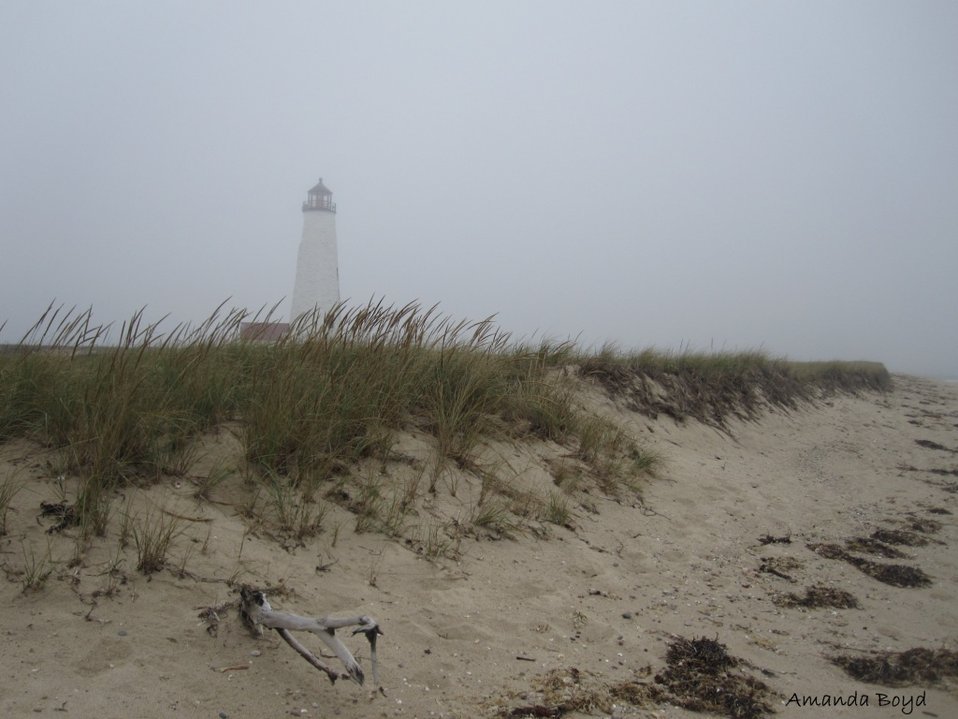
misty day on Nantucket NWR

Nantucket National Wildlife Refuge